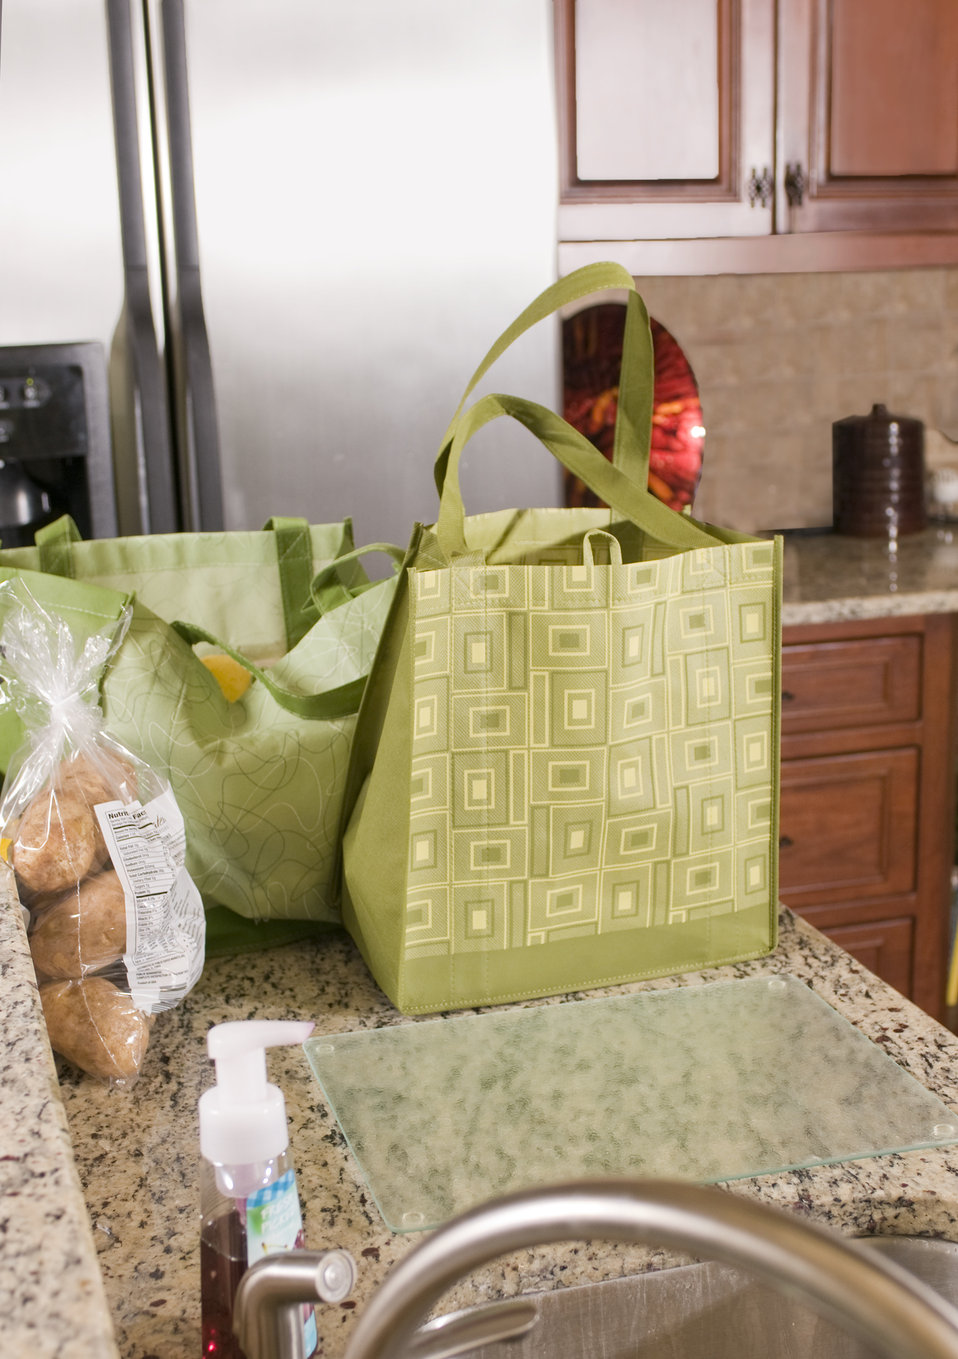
The countertop in this kitchen's sink area, had just been topped with some newly-purchased groceries. Note the cleanliness of the area, and the presence of a small pump dispenser containing antibacterial soap. Note the reusable green-patterned grocery bags, which need to be washed regularly, in order to keep them sanitary.